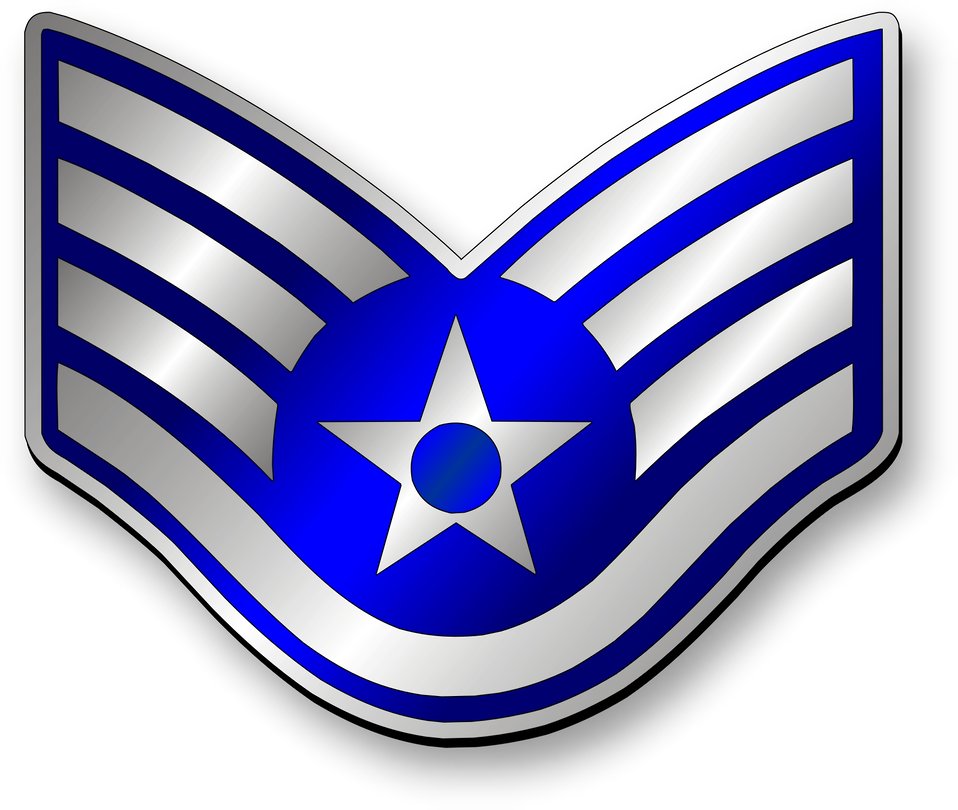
Staff sergeant promotion list released